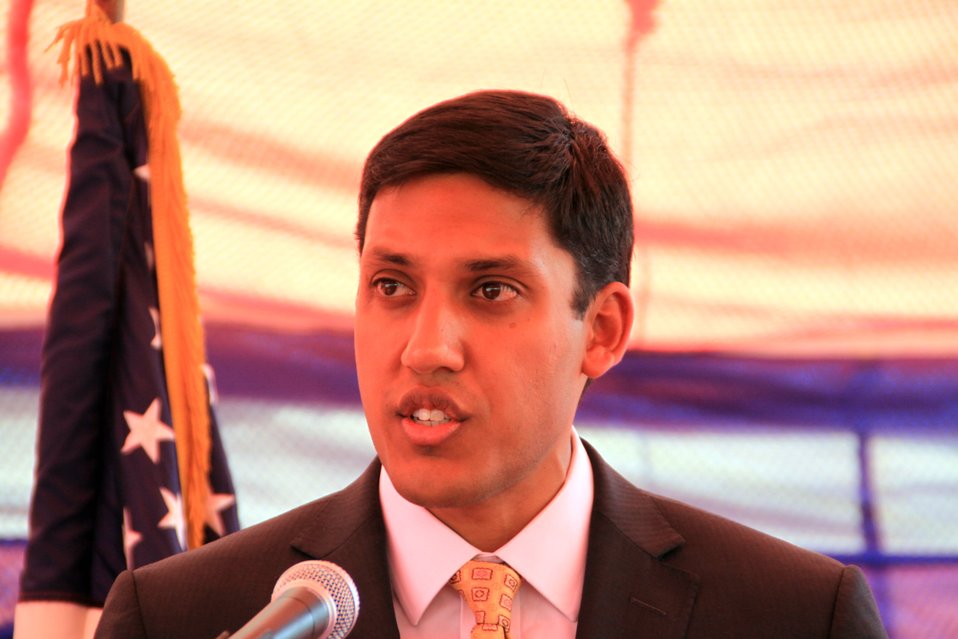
Badam Bagh Farm